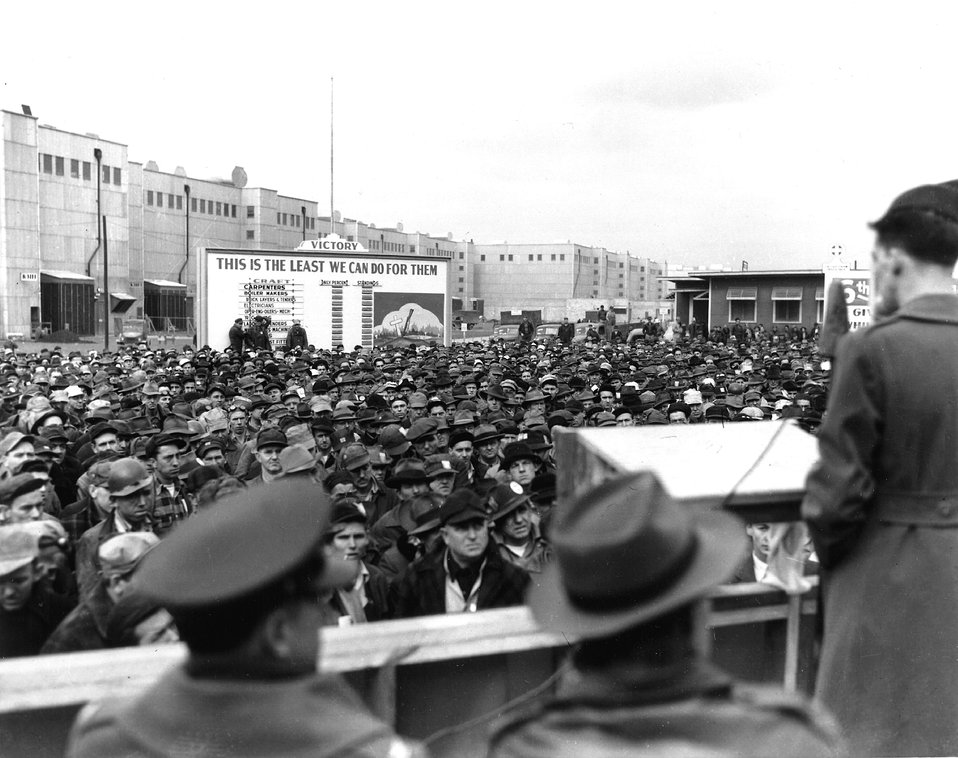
A disabled veteran addresses a bond rally at the K-25 plant and urges the workers to stay on the job. c. Dec. 13, 1944